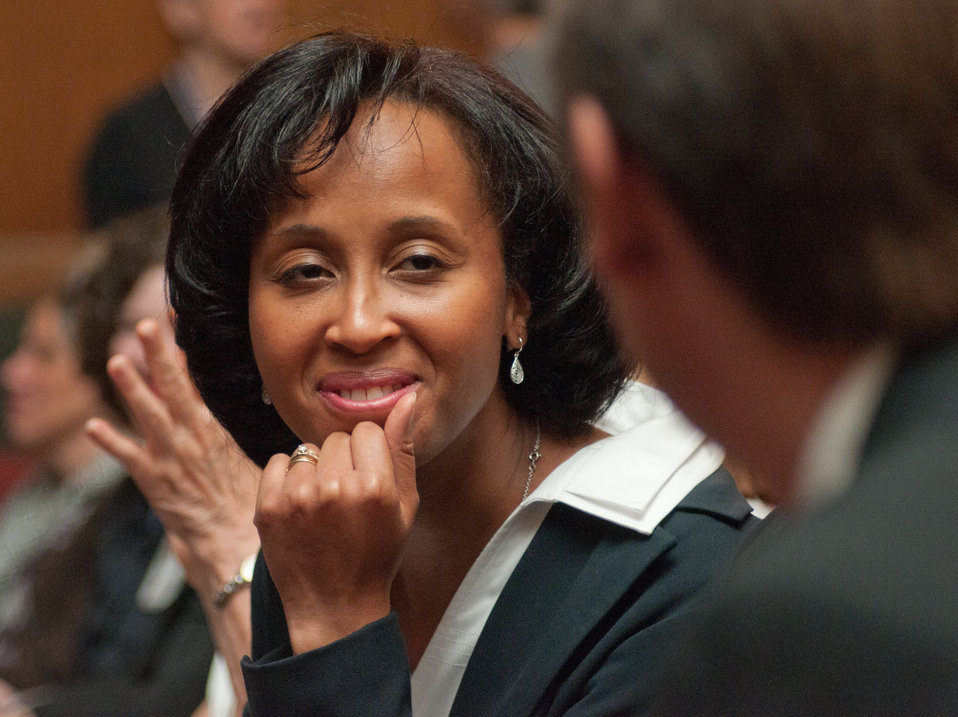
Members of the audience relax waiting for the announcement from First Lady Michelle Obama, Agriculture Secretary Tom Vilsack and Surgeon General Regina Benjamin about the new food icon MyPlate at the U.S. Department of Agriculture (USDA) in Washington, D.C on Thursday, Jun. 2, 2011. MyPlate is an easy-to-understand visual cue to help consumers adopt healthy eating habits that are consistent with the 2010 Dietary Guidelines for Americans and will replace the USDA’s MyPyramid image as the government’s primary food group symbol. MyPyramid will remain available to interested health professionals and nutrition educators in a special section of the new website.